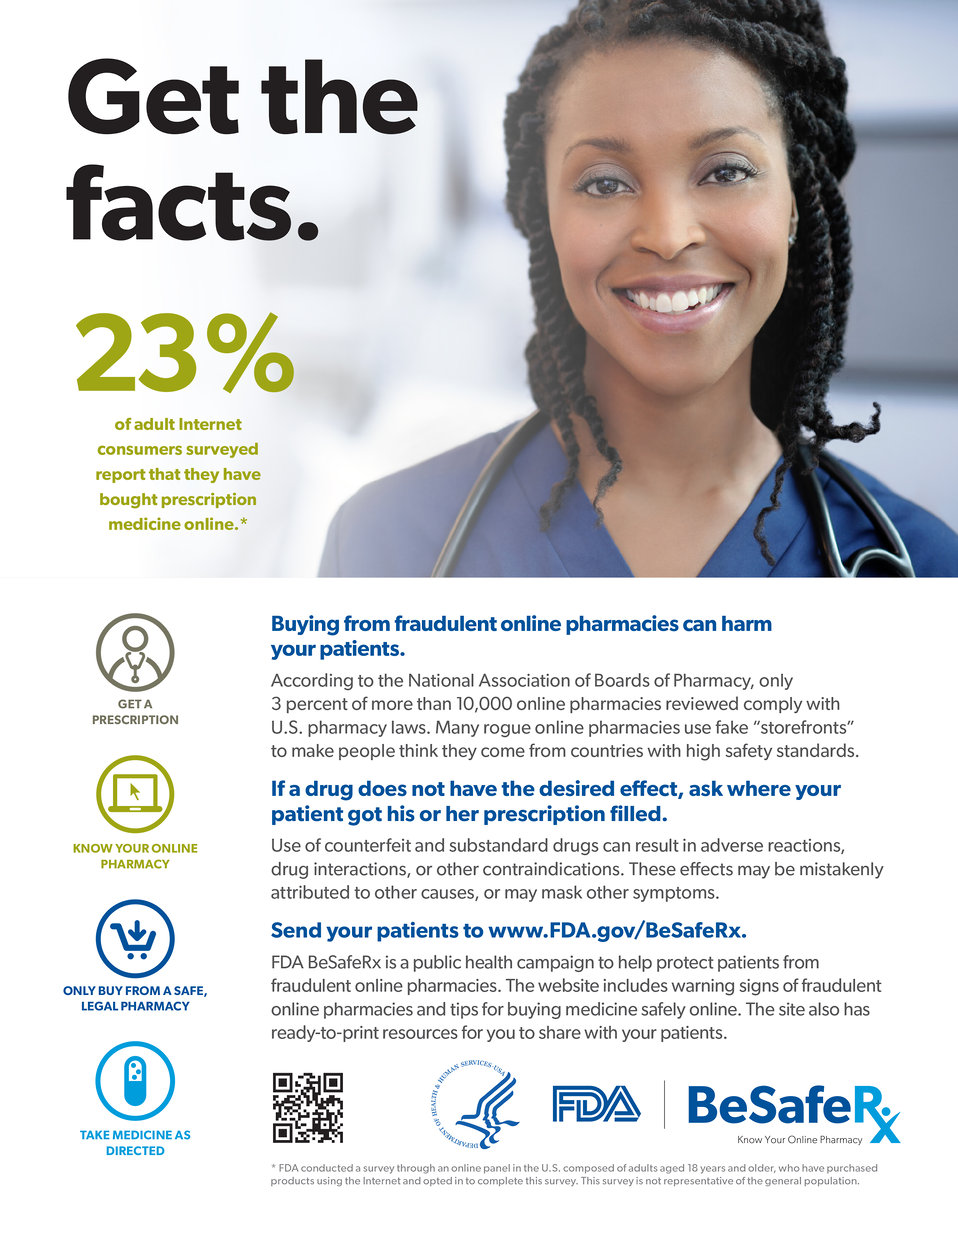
BeSafeRx Physician

A high quality PDF of this public service announcement is available at: BeSafeRx Campaign Materials

This is your one-stop resource for all materials associated with the FDA BeSafeRx campaign. FDA developed these materials to educate consumers about the risks associated with fake online pharmacies and how to safely purchase prescription medicine online. Put them to work for you!